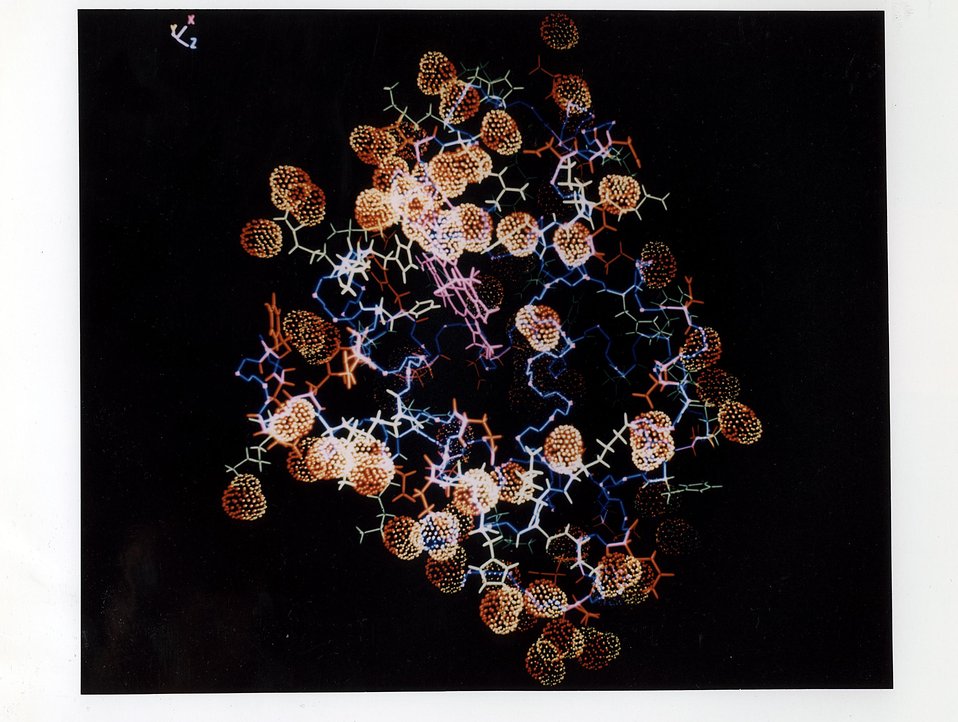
The power of neutron diffraction in detecting hydrogen atoms, and thus determining the positions of hydrating water molecules, is shown in this image of hydrated carbon monoxide myoglobin. The protein is depicted as a stick model, whereas the water molecules are shown as space-filling stippled structures. Note that the access route (center of picture) to the CO binding site on the pinkish-colored heme group is unobstructed by water molecules.